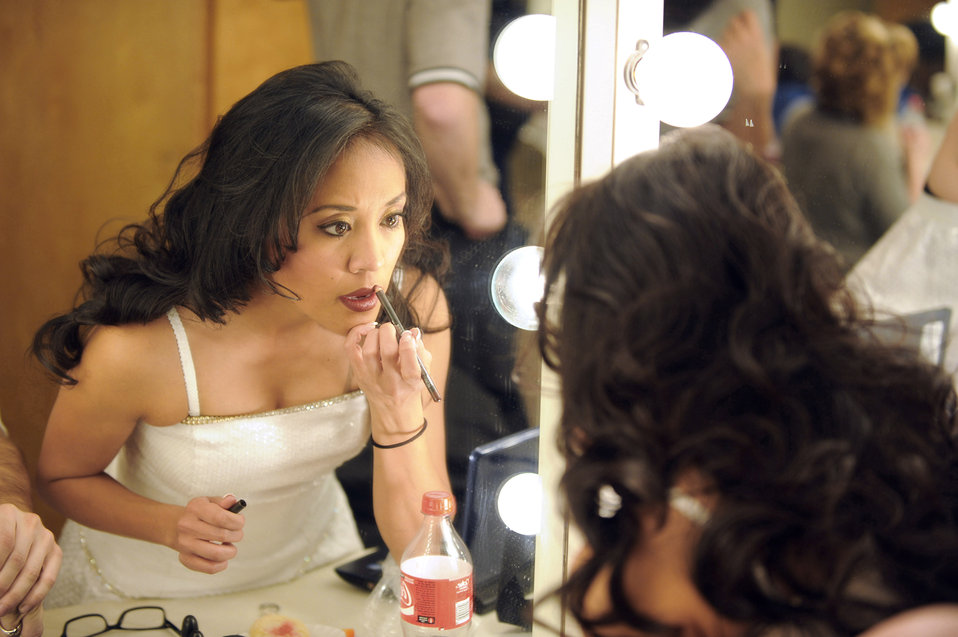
Life on the road with Tops In Blue

Senior Airman Jennifer Bone applies makeup before a performance at the Patriot Hall Auditorium Feb. 3, 2010, in Sumter, S.C. Airman Bone is a member of Tops In Blue.